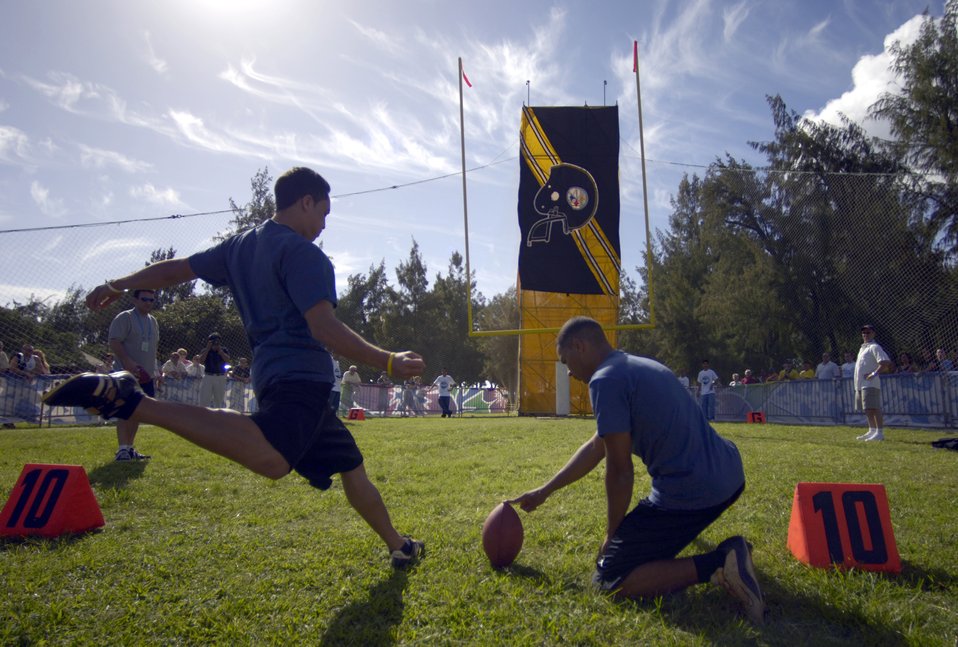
NFL Military Challenge

KAPIOLANI PARK, Hawaii (AFPN) -- Ryan McGovern attempts another field goal during National Football League Military Challenge. Each service competed in punt, pass, snapping and kicking competitions.